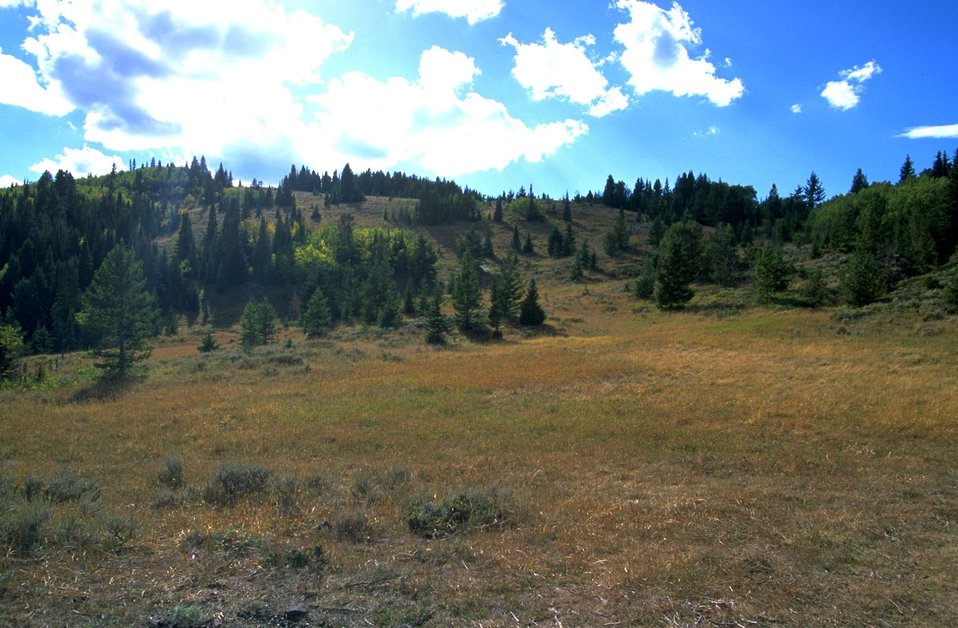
Hills and Trees near Reservoir Lake